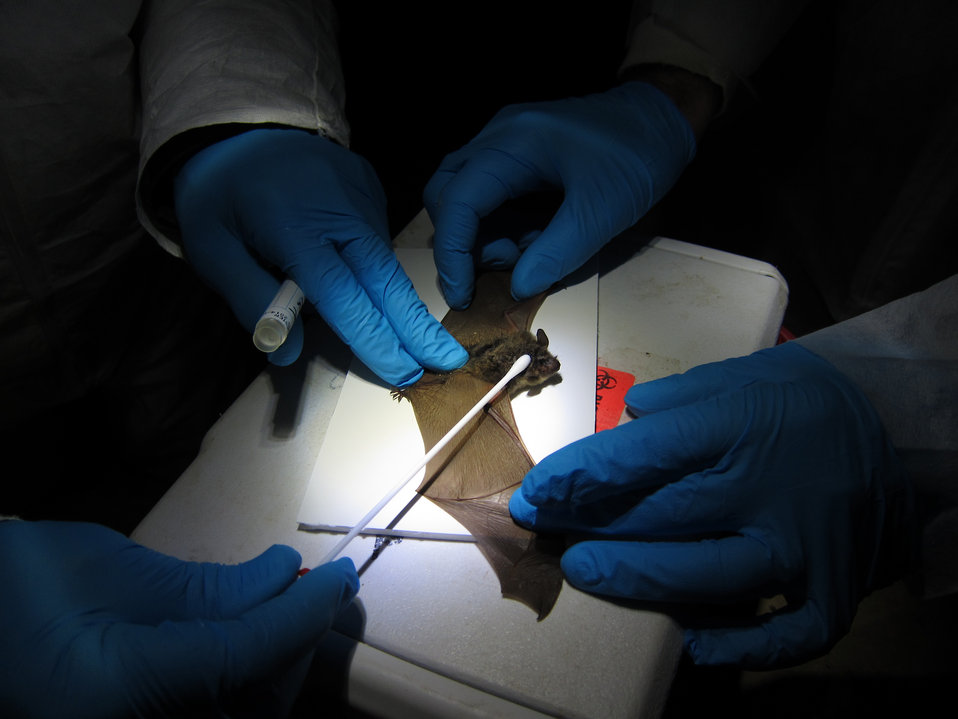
Biologists swab a northern long-eared bat with symptoms typical of WNS

A northern myotis (Myotis septentrionalis) with suspected White Nose Syndrome swabbed by Illinois Natural History Survey Mammalogist Dr. Joe Merritt while Joe Kath (Illinois Department of Natural Resources Endangered Species Manager/Bat Specialist) holds the animal. Histopathological confirmation of White Nose Syndrome for this animal is still pending. 13 February 2013.